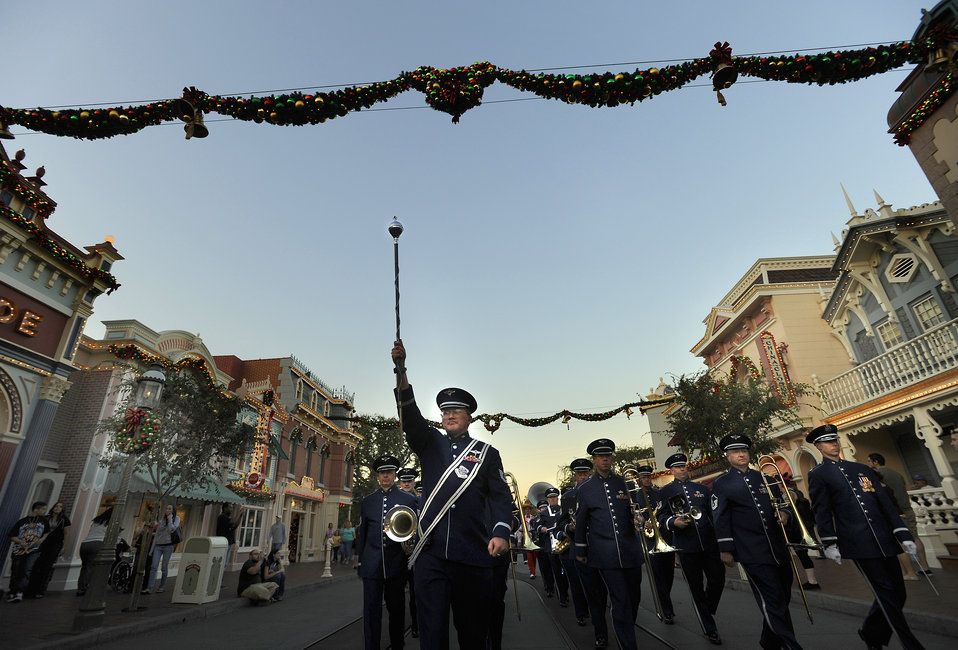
Air Force Week Los Angeles

Marching band members of the U.S. Air Force Band of the Golden West perform down Main Street U.S.A. at the Disneyland Resort in Anaheim, Calif., Nov. 17. The band is performing during Air Force Week Los Angeles, an event designed to educate the local population about the Air Force's capabilities and missions through various activities and exhibitions in the Los Angeles area.